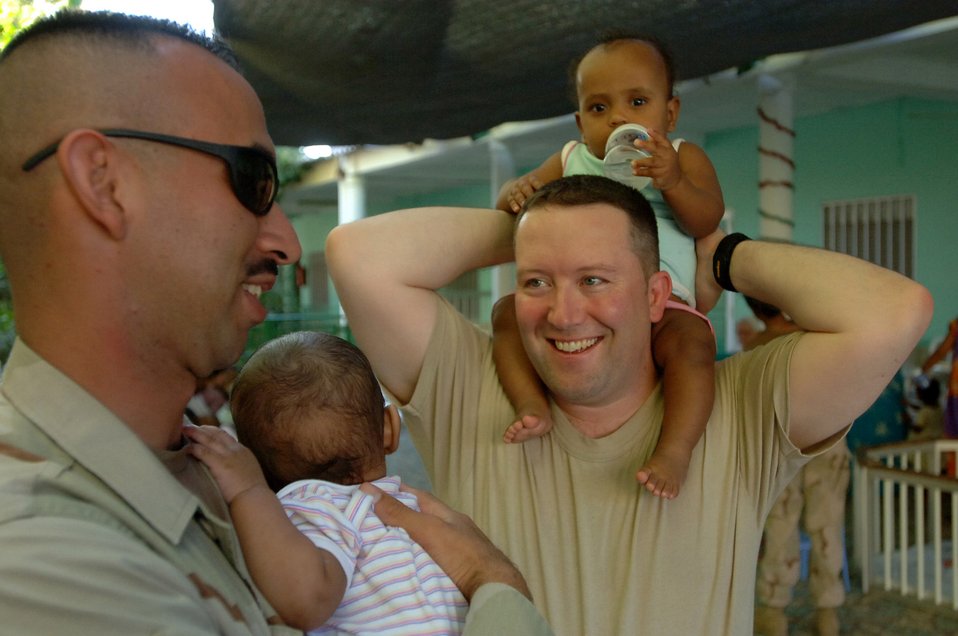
Airmen spend special time with orphans

Staff Sgt. Francisco Hernandez (left) and Maj. Lanny Greenbaum enjoy playing with the babies Jan. 26 at a Djibouti orphanage near Camp Lemonier, Djibouti. Servicemembers supporting the Combined Joint Task Force-Horn of Africa mission donate their time three times a week to help French nuns who run the facility feed the babies at dinner time. More than 60 babies and toddlers are cared for at the facility. Major Greenbaum, a Plain City, Ohio, native, is the CJTF-HOA information management officer and Sergeant Hernandez, a Merkel, Texas, native, is the CJTF-HOA Information Management Office Data Systems NCO in charge.